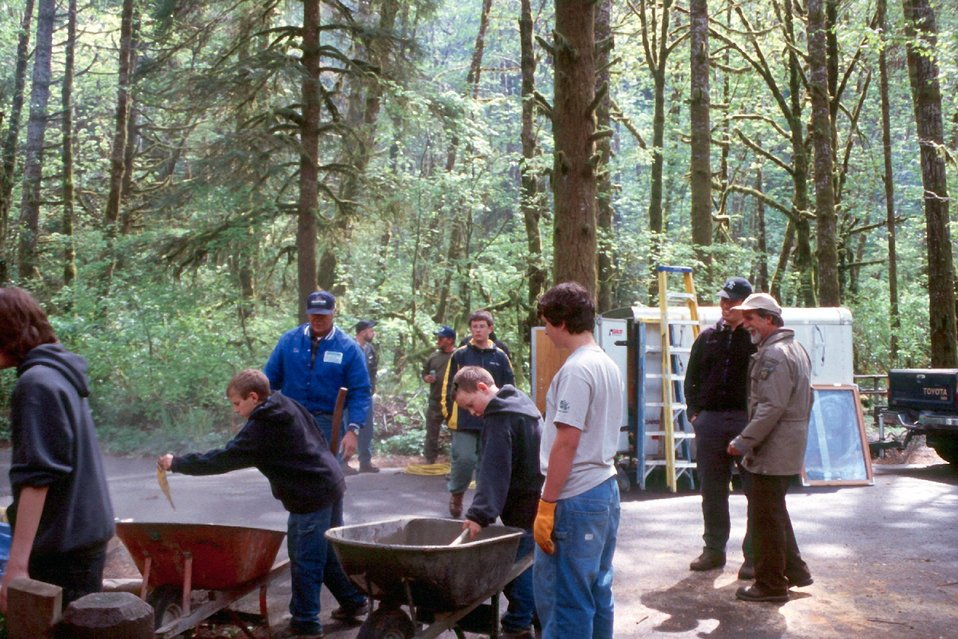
Boy Scouts from Eugene Troop 100 are installing an interpretive Kiosk at Clay Creek Recreation Site.